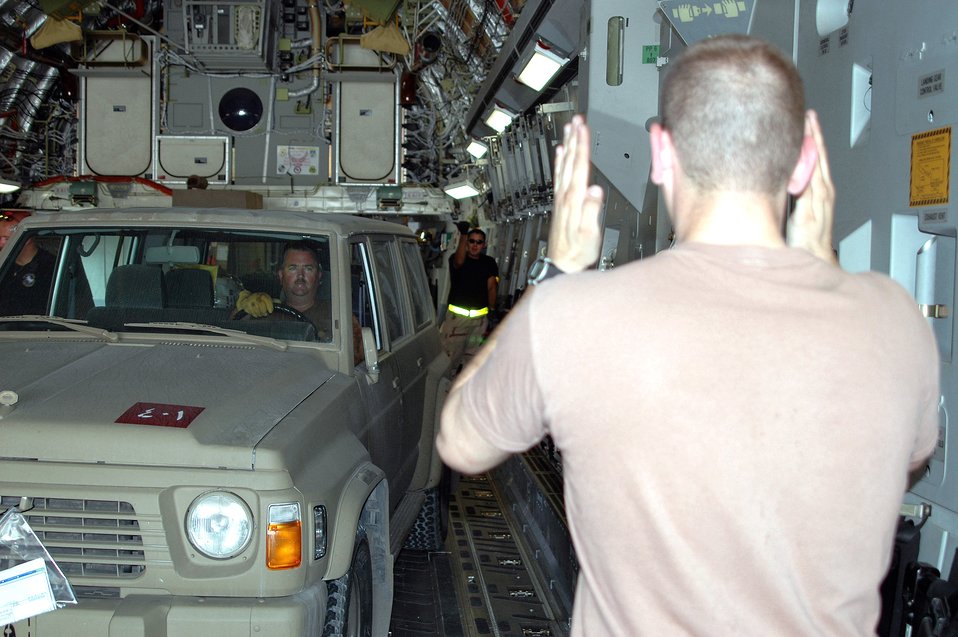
Pakistan relief efforts

SOUTHWEST ASIA -- Staff Sgt. Ramone Herrera marshals a Qatari vehicle driven by Tech. Sgt. Jeffrey Brown while another Airman spots for them as they drive onto a C-17 Globemaster III aircraft. The vehicle is part of the earthquake relief aid Qatar sent to Pakistan. The Airmen are part of the 8th Expeditionary Air Mobility Squadron.